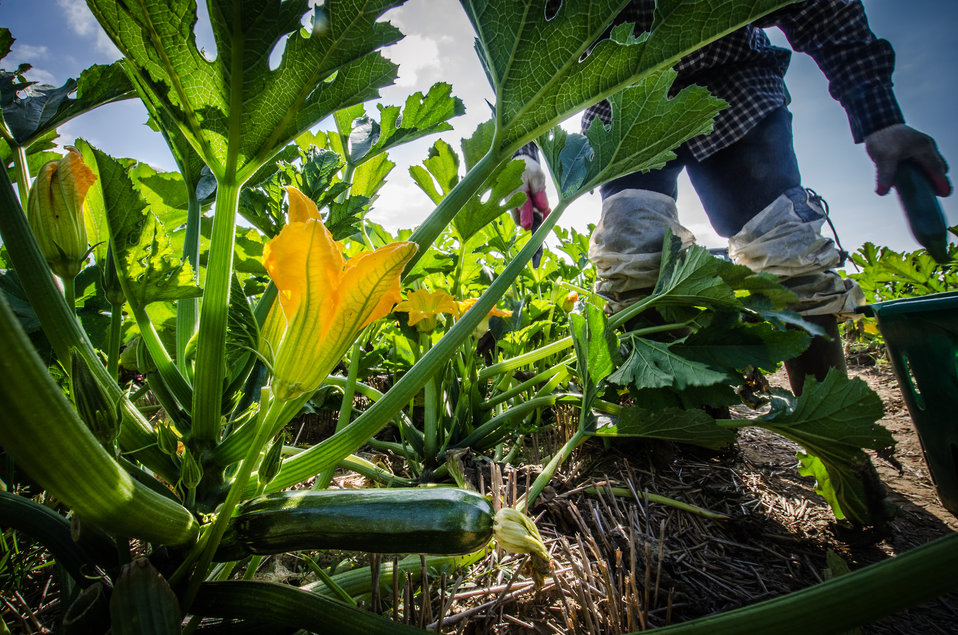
Migrant workers harvest green zucchini squash from rows of plants at Kirby Farms in Mechanicsville, VA on Friday, Sep. 20, 2013. The squash is then transferred to the processing crew for washing and packaging for shipment to wholesalers. Kirby Farms a third-generation family farm that covers 500 acres and generates produce and grains on a year-around operation.